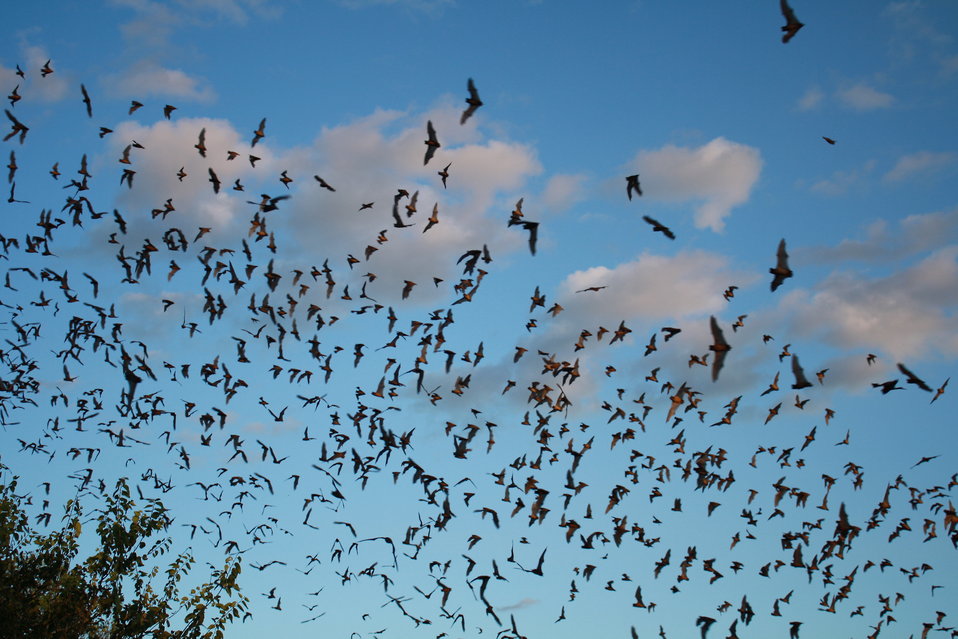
Mexican free-tailed bats exiting Bracken Bat Cave